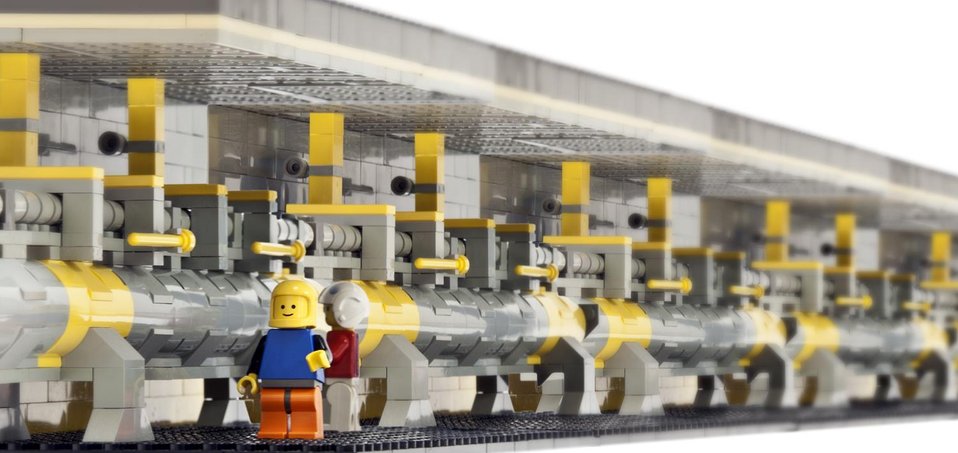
Photo of the Week: Lego Rendition of SLAC National Laboratory's Linear Particle Accelerator

At two miles long, SLAC's linear particle accelerator is a monster of a machine. But now, thanks to an old collection of Legos and some creative work by SLAC graphic designer Greg Stewart, the two-mile accelerator has been drastically reduced in size. After happening upon his Legos at home one night, Stewart decided to spend his evening designing, building and photographing this Lego diorama homage to the inside of the SLAC linac, a place that's 20 feet underground and not often seen by anyone besides the accelerator engineers who work there. SLAC's safety officers will even be pleased to see the Lego workers wearing their 'PPE' (personal protective equipment, in this case helmets). See an actual photo of the SLAC linac.